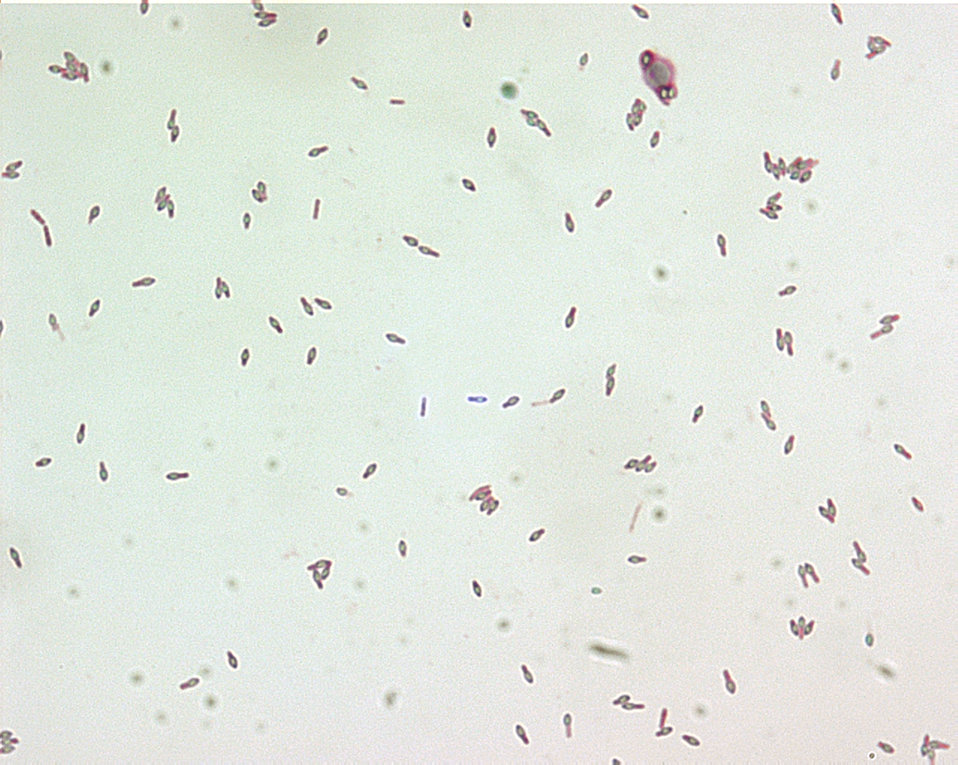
Clostridium botulinum spores stained with Malachite Green Stain.